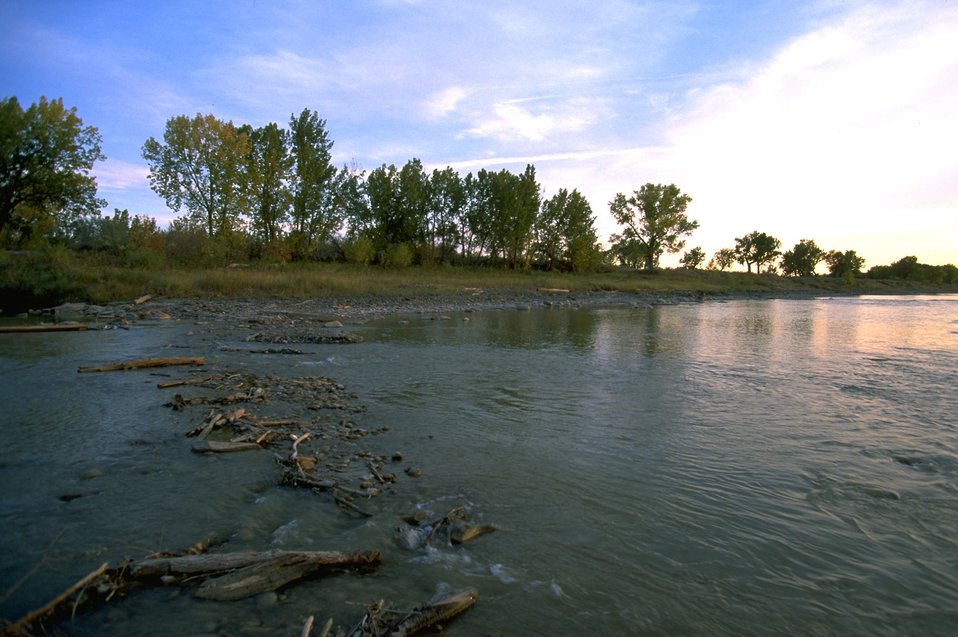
Yellowstone River near Matthews Recreation Site